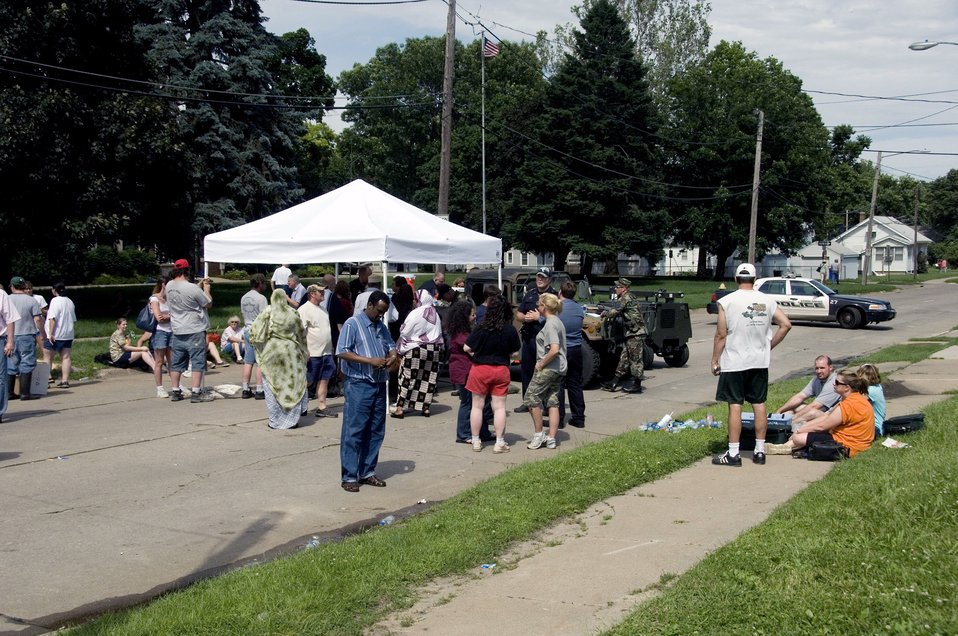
Air National Guard shores up as flood recedes

Residents of Cedar Rapids, Iowa, wait at a checkpoint to hear if they will to be allowed to return home after massive flooding overwhelmed much of the city.